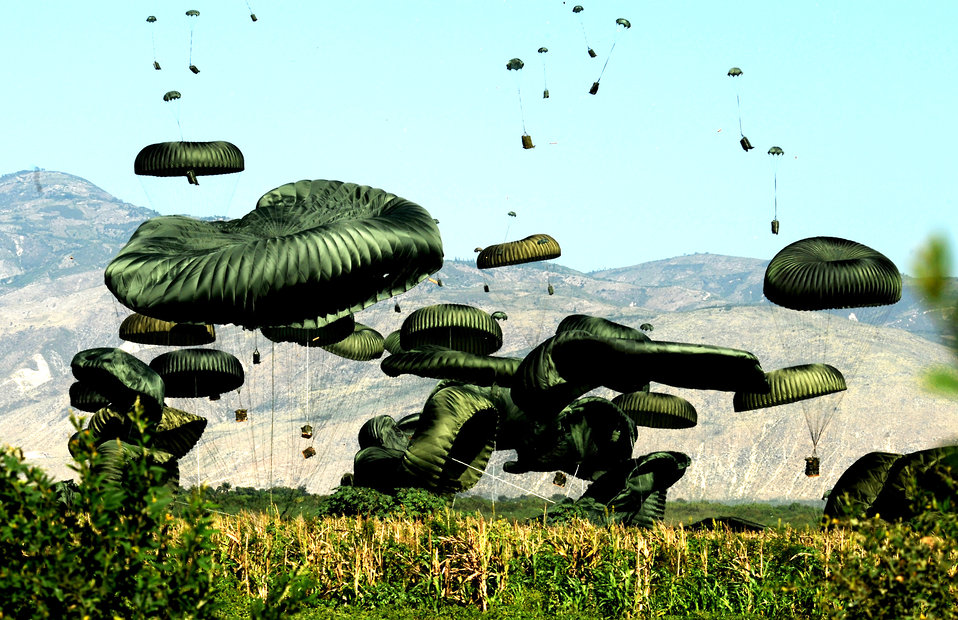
Airmen airdrop relief supplies to Haitians

Bundles of food and water are air delivered Jan. 23, 2010, to the outlying area of Port-au-Prince, Haiti. Approximately 14,000 bottles of water and 14,500 Meals, Ready to Eat were in included in the air delivery.